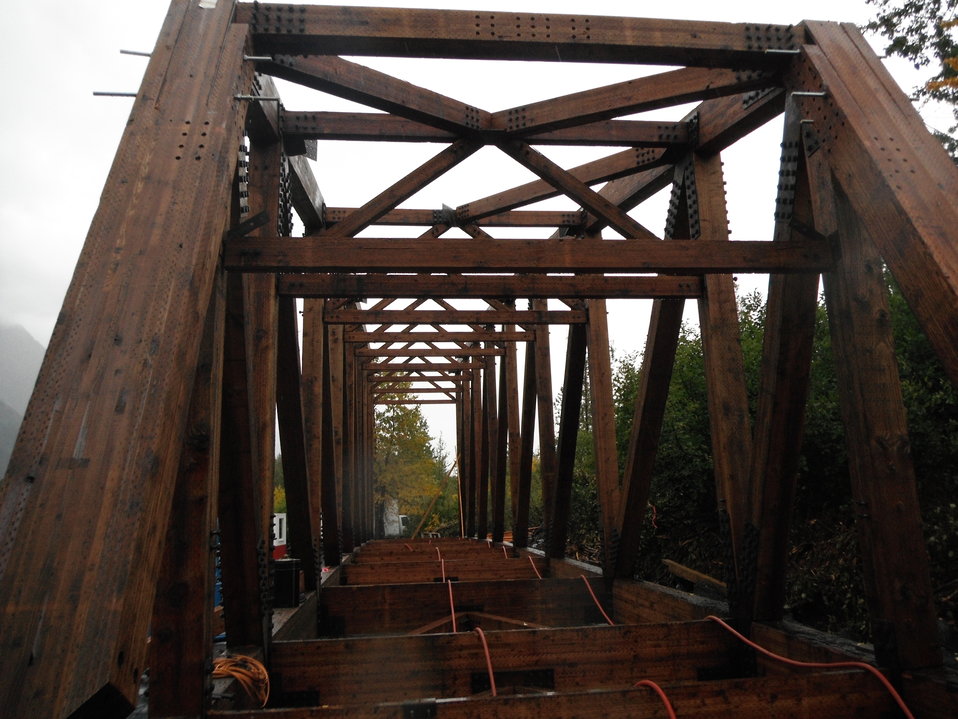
The longest, single-space timber truss bridge in North America is currently under construction on the Chugach National Forest in Alaska.